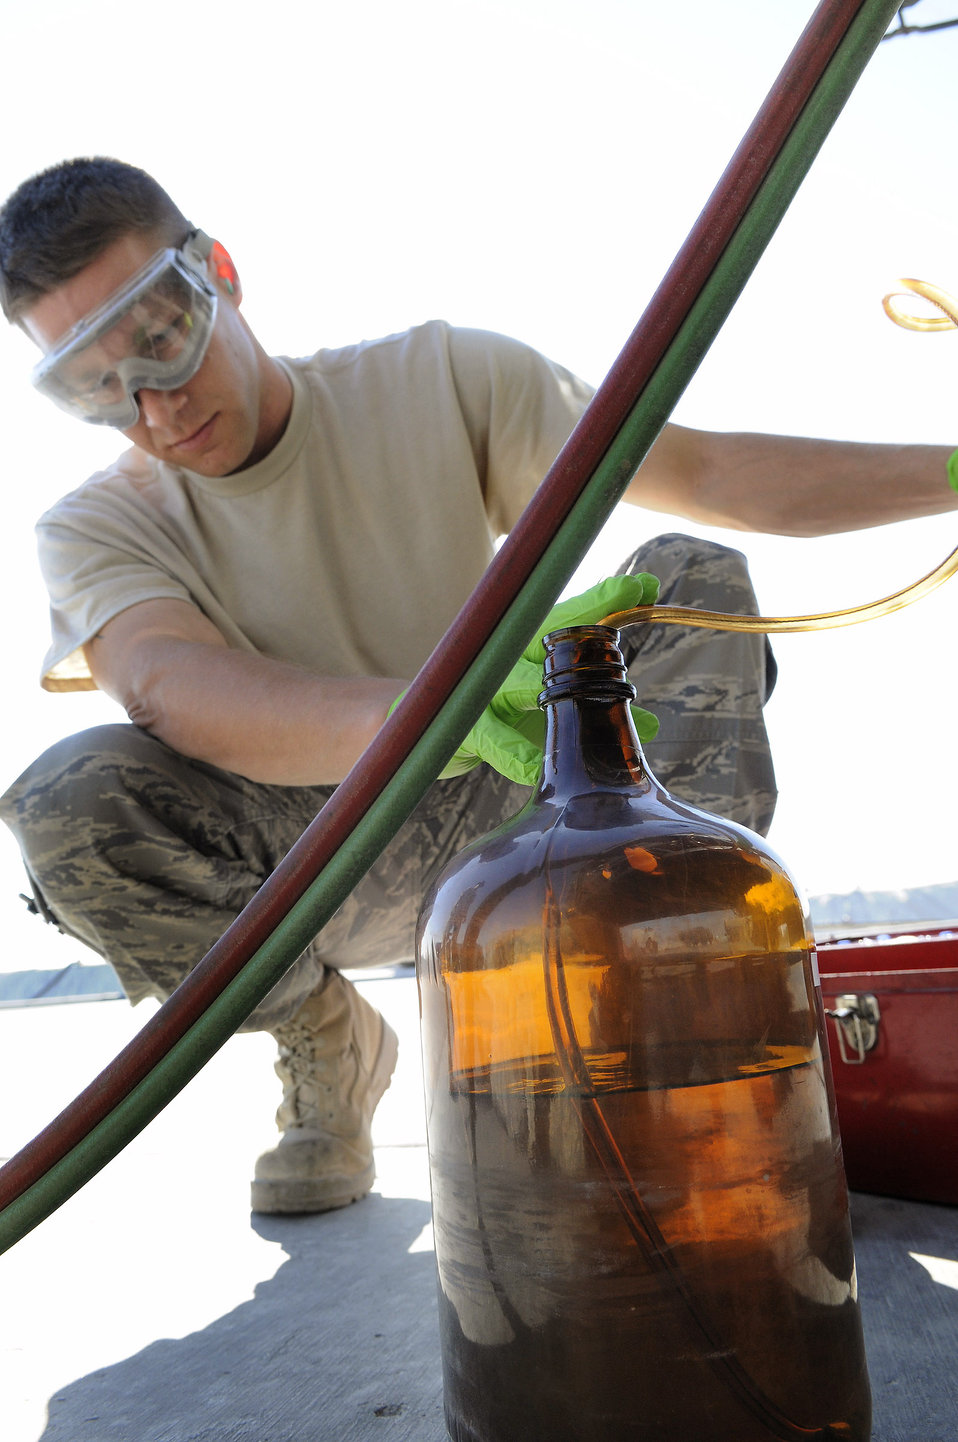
Fuel quality

Staff Sgt. Ronald Gasper fills a bottle with JP-8 fuel to perform a bottle method test Dec. 8 at an air base in Southwest Asia. The bottle method test is used to test a fuel truck's filter separator and measures the amount of impurities in the fuel. Sergeant Gasper is a fuels lab technician assigned to the 379th Expeditionary Logistics Readiness Squadron and deployed from Scott Air Force Base, Ill. He is a native of Omaha, Neb.